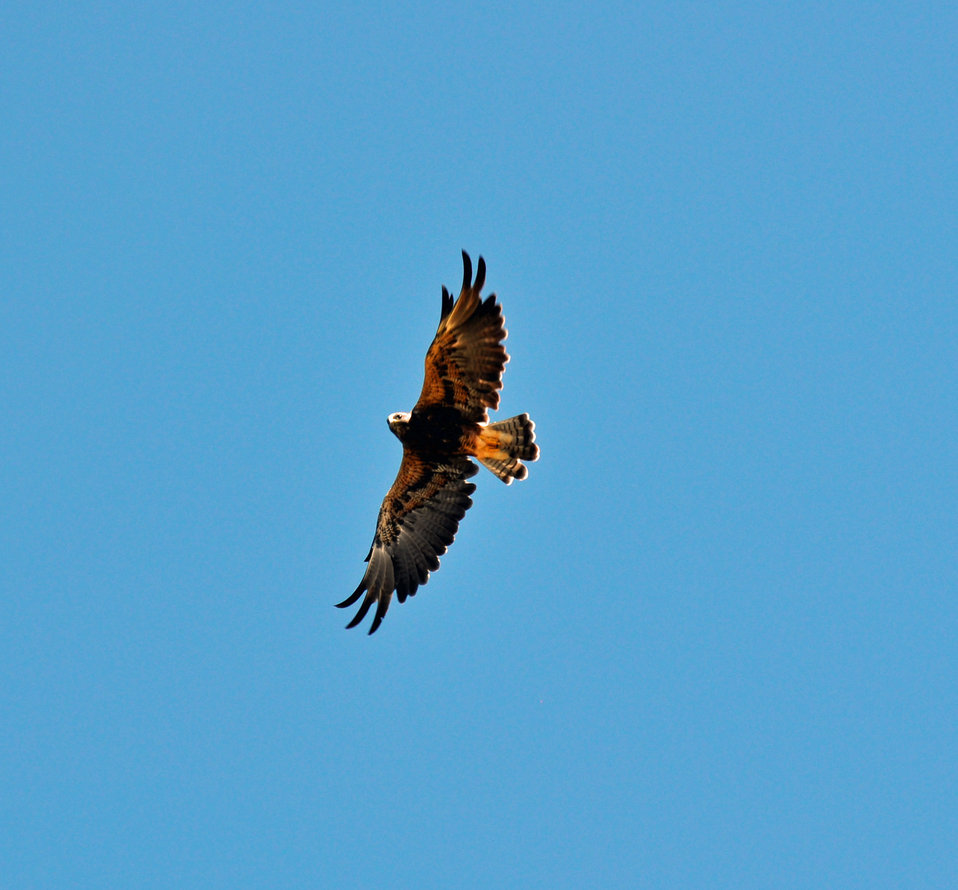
Swainson's hawk

Davis, CA